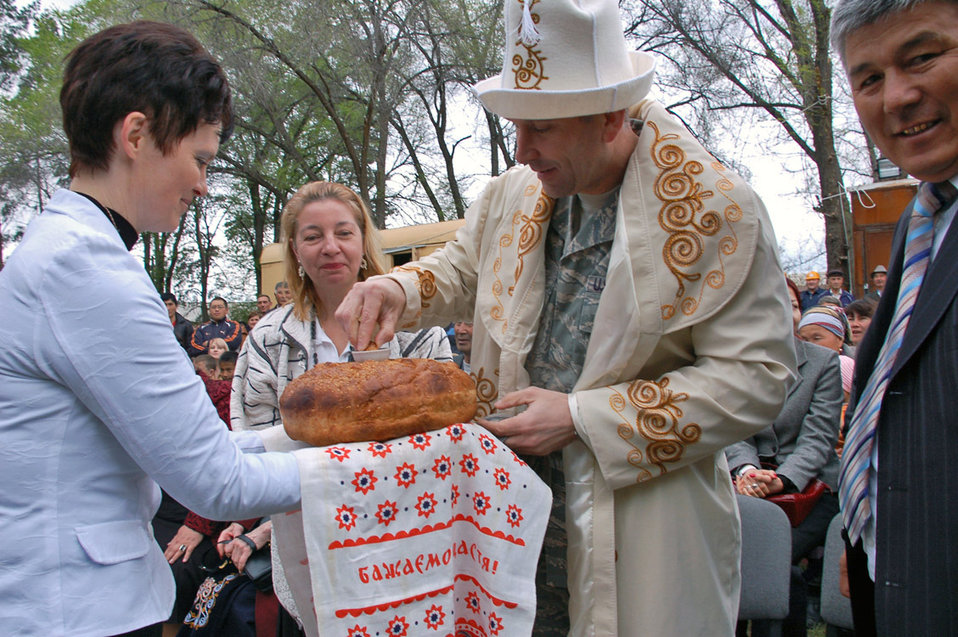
School renovation project builds bond between U.S., Kyrgyz Republic

During the Birdik Village School ground-breaking ceremony April 14, Principal Olga Voroshihina (left) shares homemade bread, called nan, with Manas Air Base commander Col. Christopher Bence. The U.S. Ambassador to Kyrgyzstan Tatiana Gfoeller and Birdik Village Mayor Syrgak Kydykeev also broke bread to symbolize peace, prosperity and good progress for the $470,000 project. The colonel is wearing a ceremonial robe called a chapan and a traditional felt hat called a kalpak.